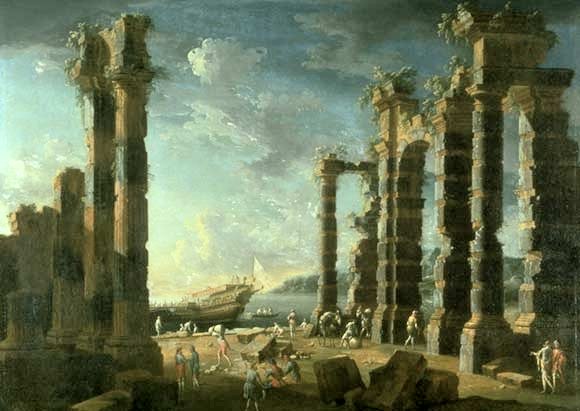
'Port of Ostia in Calm Weather', oil on canvas painting by Leonardo Cocorante, 1740s, Lowe Art Museum